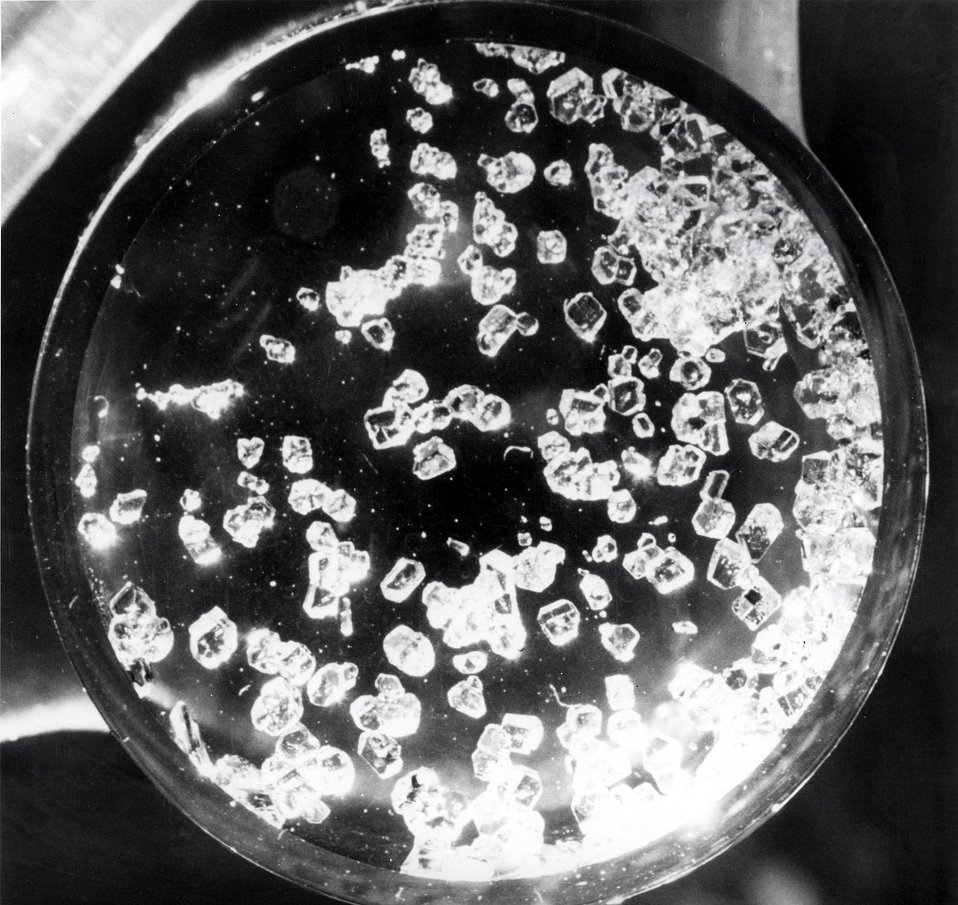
Crystals of xenon tetrafluoride
c.1964